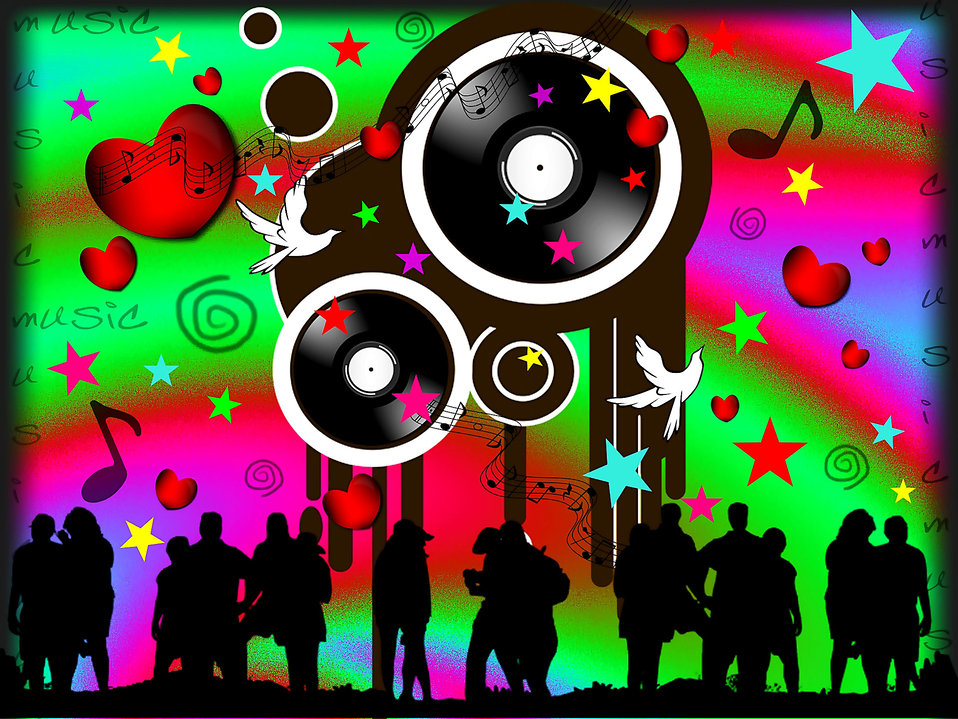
Music background 202

Background.